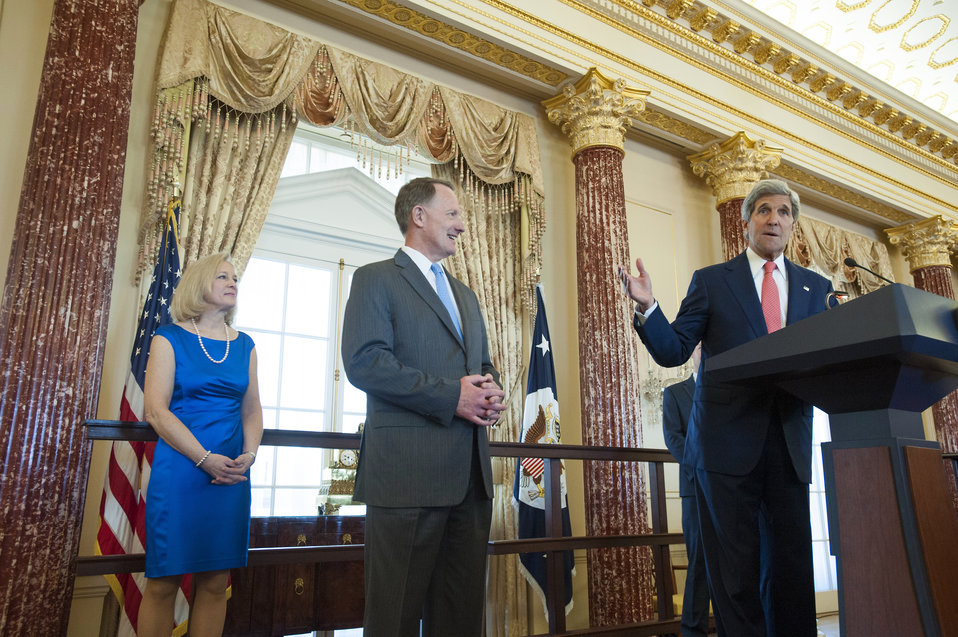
Secretary Kerry Delivers Remarks at Assistant Secretary Smith's Swearing-in Ceremony

U.S. Secretary of State John Kerry delivers remarks at the swearing-in ceremony for Assistant Secretary of State for Intelligence and Research Daniel Smith at the U.S. Department of State in Washington, D.C., on April 24, 2014.